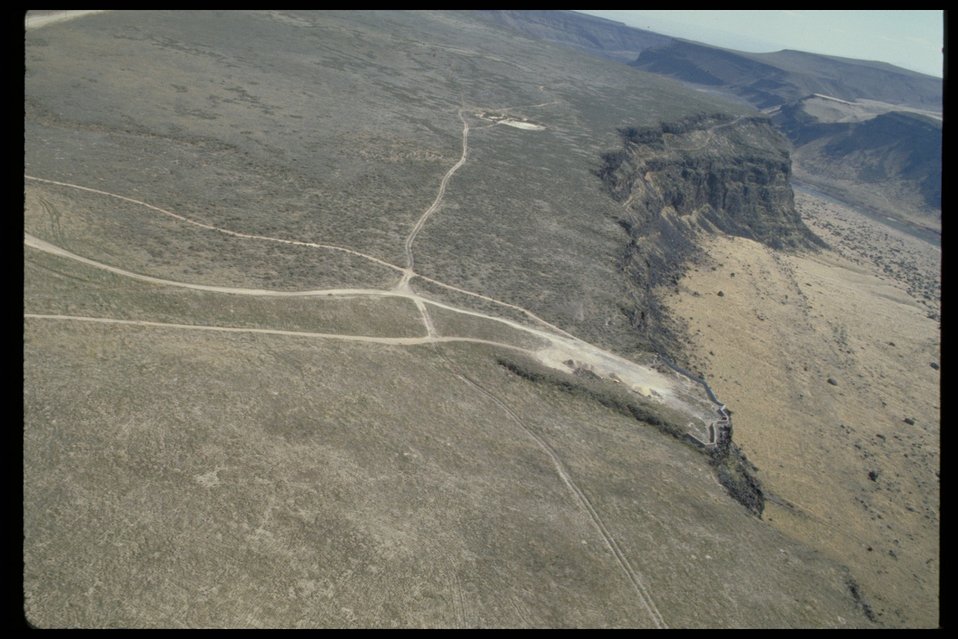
Dedication Point Aerial Birds of Prey National Conservation Area BOP Owyhee Field Office LSRD Lower Snake River District